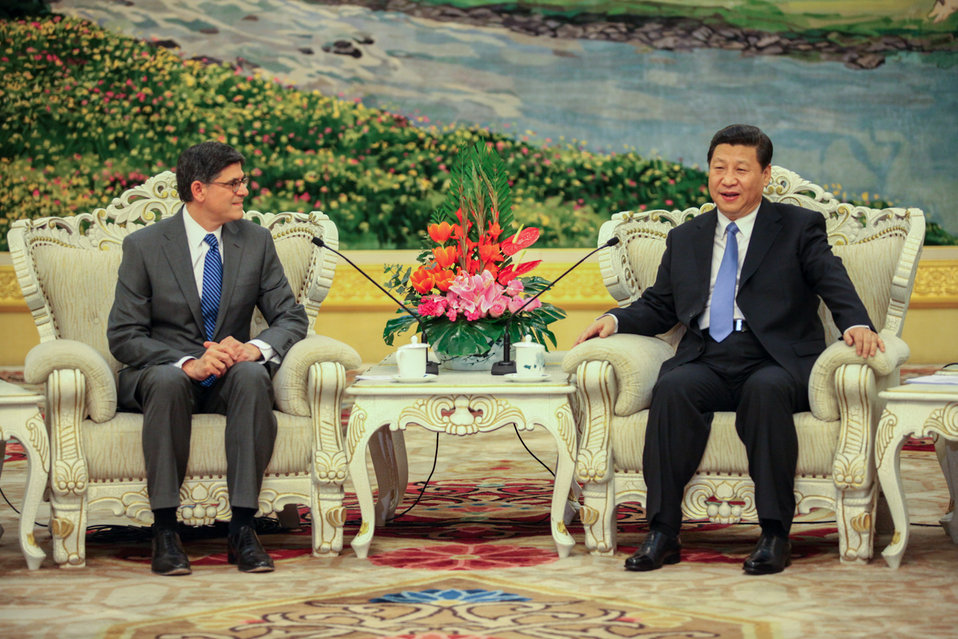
Secretary Lew speaks with China's President Xi Jinping during their meeting at the Great Hall of the People in Beijing on Tuesday, March 19, 2013.